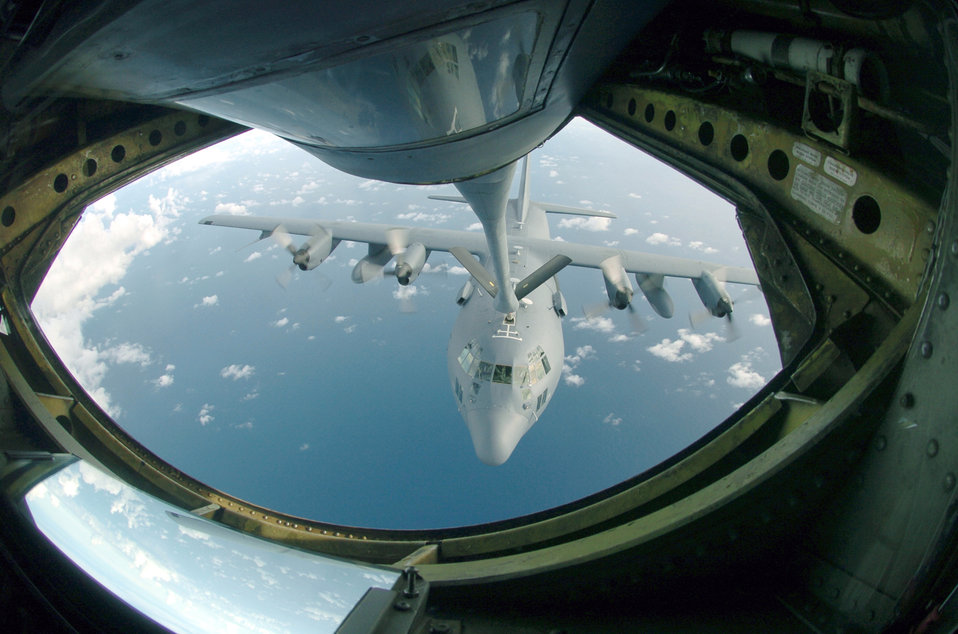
Got gas?

OVER THE PACIFIC OCEAN -- A C-130 Hercules from the 1st Special Operations Squadron at Kadena Air Base, Japan, is refueled by a KC-135 Stratotanker from the 909th Air Refueling Squadron, also at Kadena. The refueling squadron's aircrews support peacetime operations and all levels of conflict in the Pacific theater.